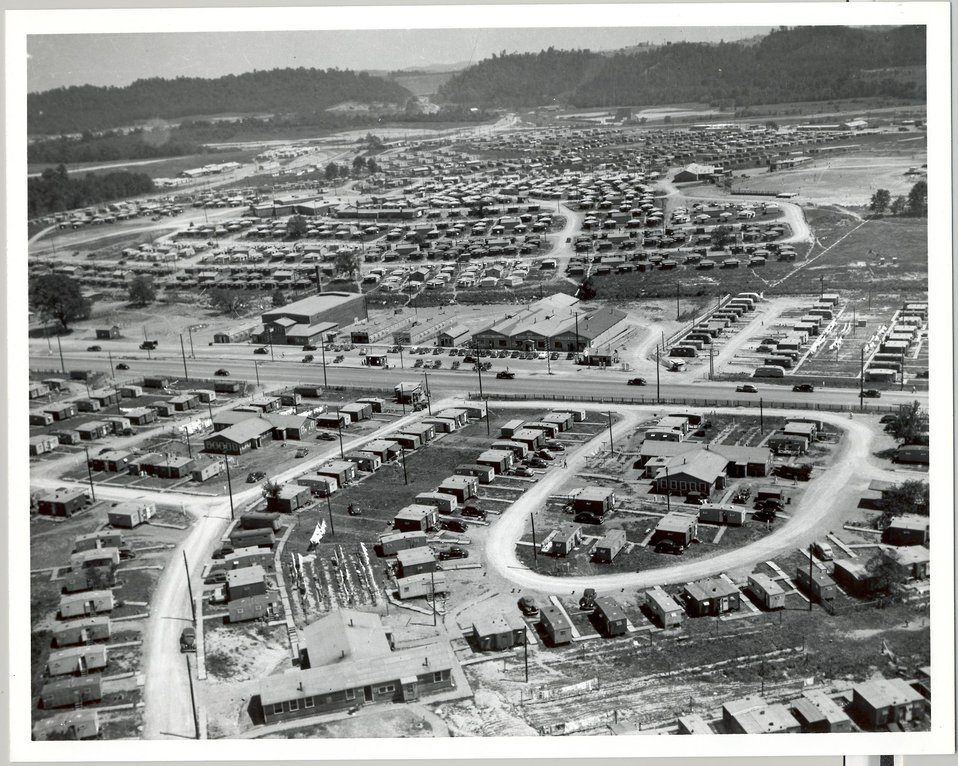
Aerial View of Midtown Shopping Center